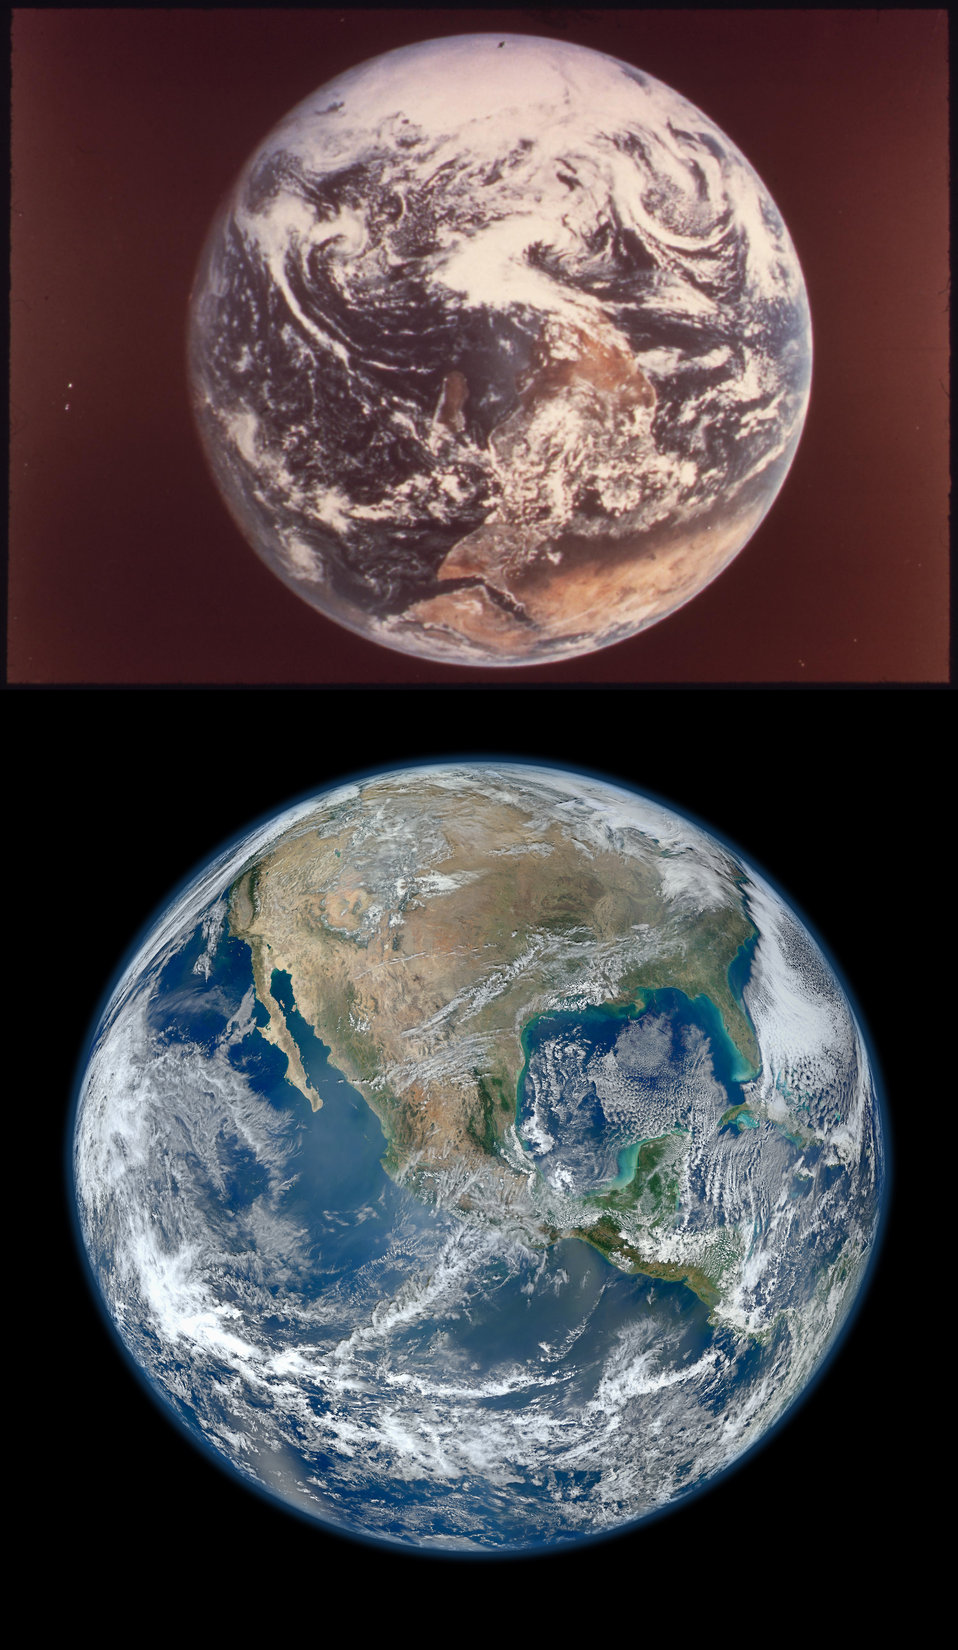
Earth - Then and Now Courtesy of NASA

'Then Documerica image': Earth, as Seen by Astronauts Eugene Cernan, Ronald Evans and Harrison Schmitt from Apollo 17. December, 1972. Photographer: NASA 1

U.S. National Archives' Local Identifier: NWDNS-412-DA-11344
From: Series: DOCUMERICA: The Environmental Protection Agency's Program to Photographically Document Subjects of Environmental Concern, compiled 1972-1977 (Record Group 412)

'Now State of the Environment image' : Most Amazing High Definition Image of Earth - Blue Marble
January 25, 2012 by Suomi NPP, NASA Earth-observing research satellite.

*Updated February 2, 2012: According to Flickr, 'The western hemisphere Blue Marble 2012
image has rocketed up to over 3.1 million views making it one of the all time most viewed images on the site after only one week.'

Join State of the Environment, uniting earthling (and satellite) views of our shared planet since Earth Day 2011, inspired by Documerica at www.flickr.com/groups/ourenvironment